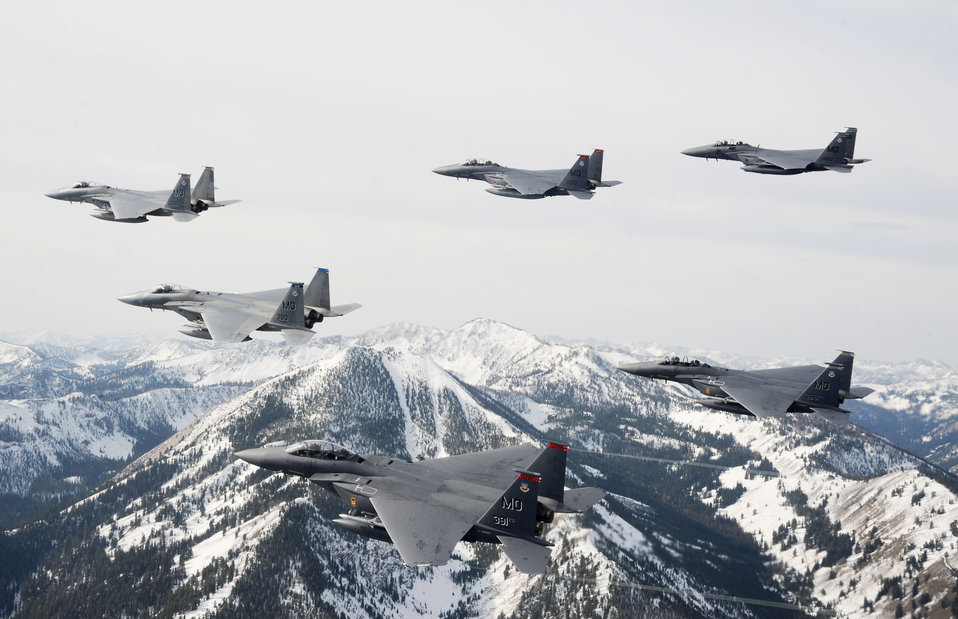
Flying over the Sawtooth Mountains

A six-ship formation of F-15C Eagle and F-15E Strike Eagles fly over the Sawtooth Mountains in Idaho Oct. 13, 2009. The aircraft are from the 366th Fighter Wing at Mountain Home Air Force Base, Idaho.